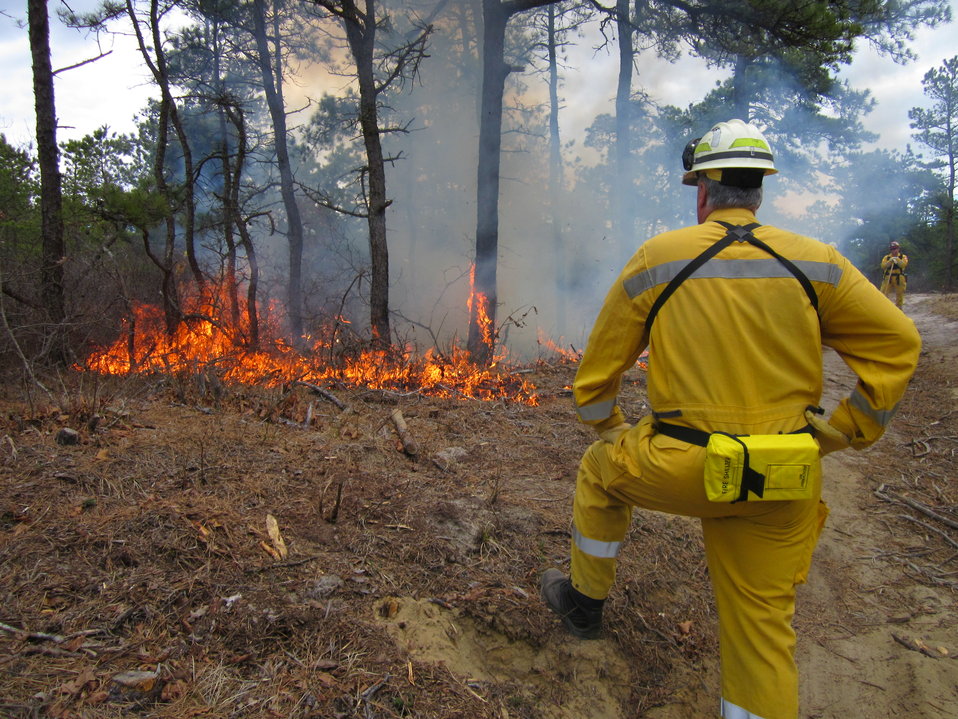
Watchful Eye

Mashpee, Massachusetts, April 5, 2012. George Baker, Chief of the Town of Mashpee, Massachusetts Fire Department, monitors a test fire for a controlled burn at the Town of Mashpee Holland Hill Barrens area of Mashpee National Wildlife Refuge. The chief wears lightweight fire-resistant fire gear for work in the woods and carries a protective fire shelter on his belt. Test burns help fire managers decide if a controlled burn will meet its objectives. In this case, the test fire showed that the burn would meet goals of reducing fire risk to neighboring homes and improving habitat for the New England cottontail. It was conducted by the Town of Mashpee, U.S. Fish and Wildlife Service, State of Massachusetts Department of Conservation and Recreation, and Northeast Forest and Fire Management.